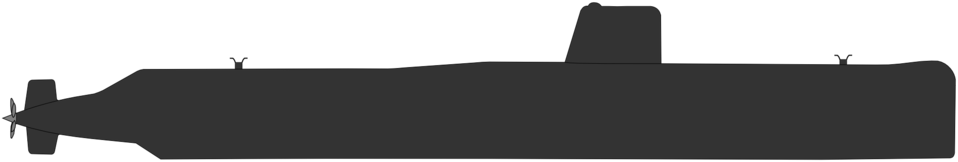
Русский: Силуэт Q244